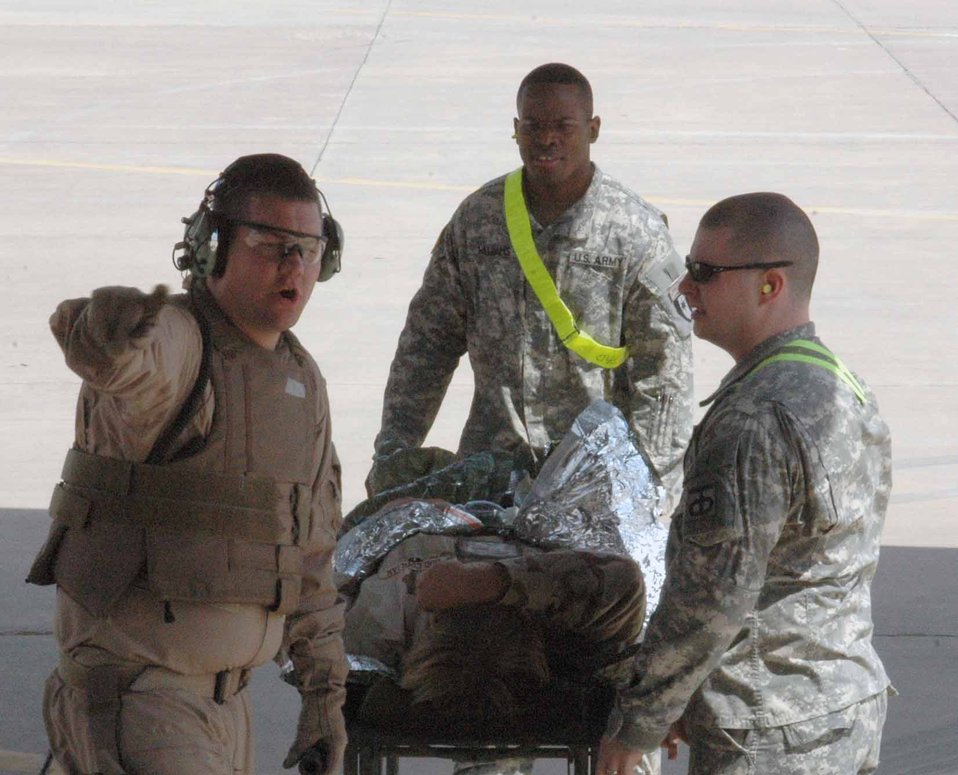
Out of harm's way

Capt. Robert Pewitt instructs Army medics where to place a litter patient who needed to be medically evacuated on a C-130 Hercules April 2 from Balad Air Base, Iraq. Captain Pewitt is a 379th Expeditionary Aeromedical Evacuation Squadron medical crew director and member of the Tennessee Air National Guard deployed from the 118th Airlift Wing in Nashville, Tenn.